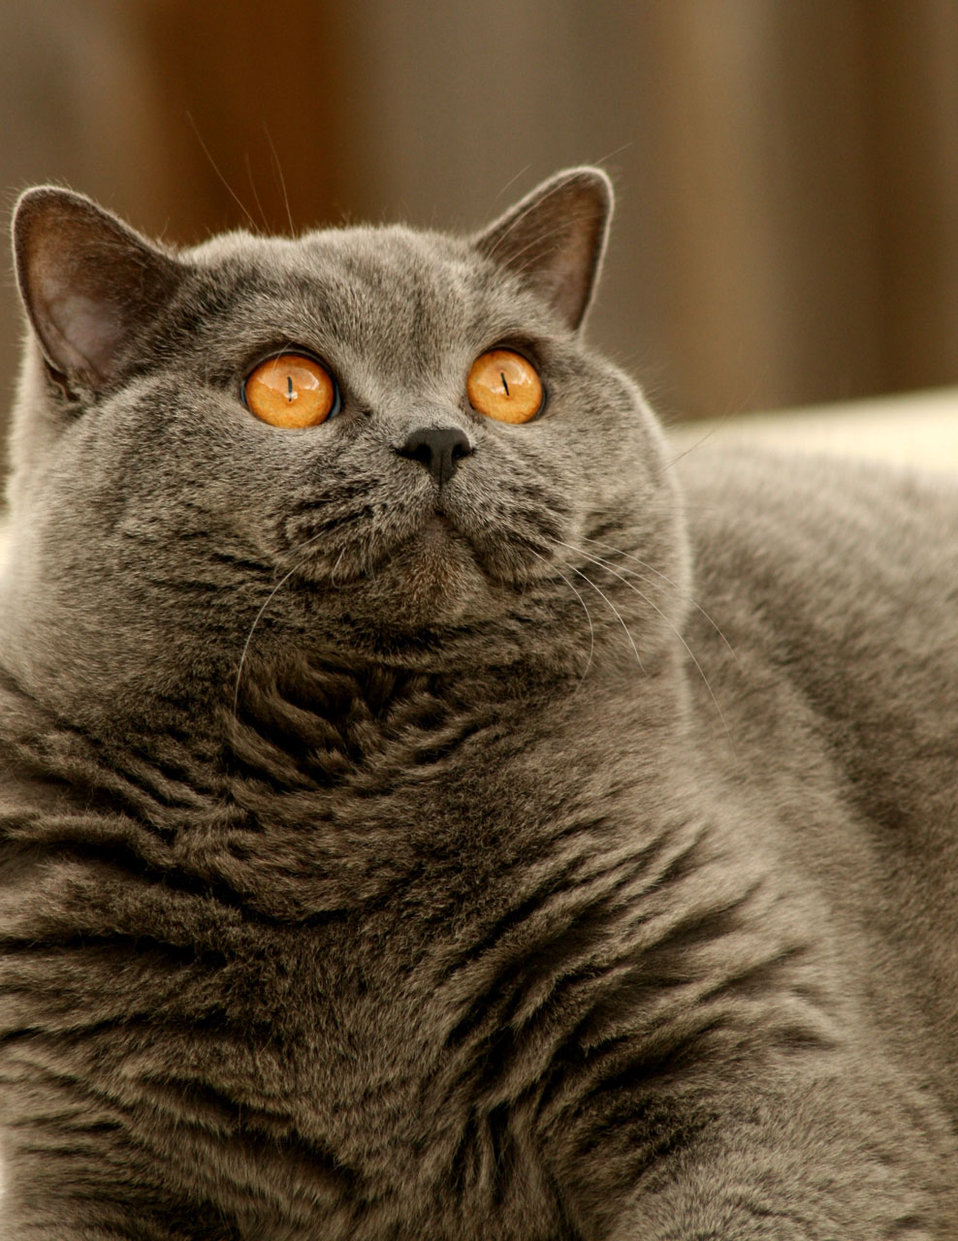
British shorthair

Boris blue british shorthair.